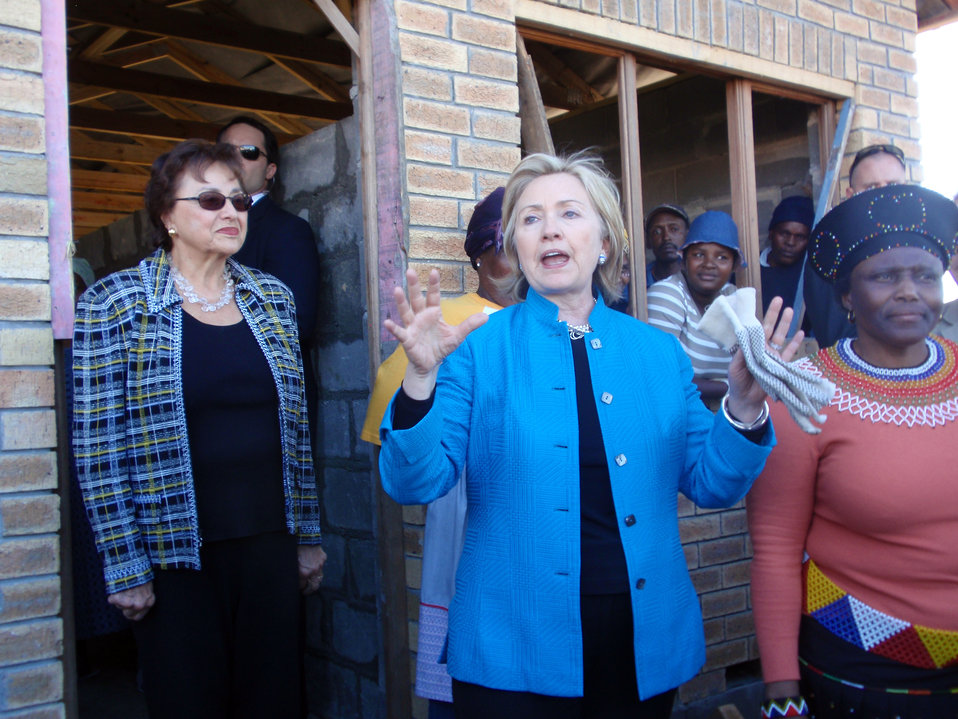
Secretary Clinton Visits Victoria Mxenge Housing Development

U.S. Secretary of State Hillary Rodham Clinton, U.S. Congresswoman Nita Lowey, and Patricia Matolengwe at Victoria the Mxenge Housing Development in Cape Town, South Africa August 8, 2009.